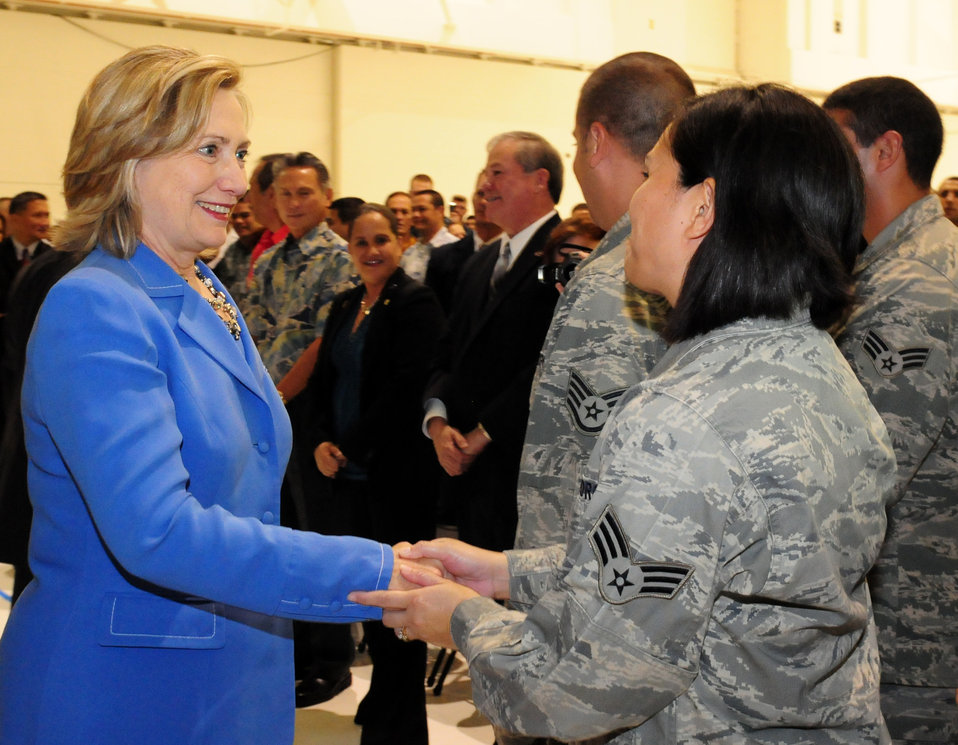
Secretary Clinton Shakes Hands With Servicemembers

U.S. Secretary of State Hillary Rodham Clinton shakes hands with servicemembers at Andersen Air Force Base in Guam on October 29, 2010.